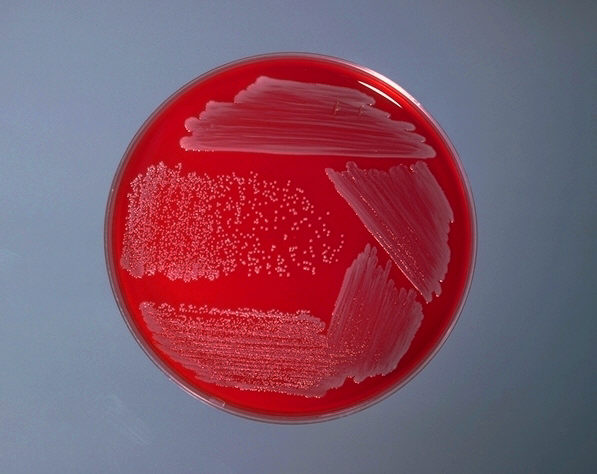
Blood agar plate culture of Corynebacterium ulcerans.